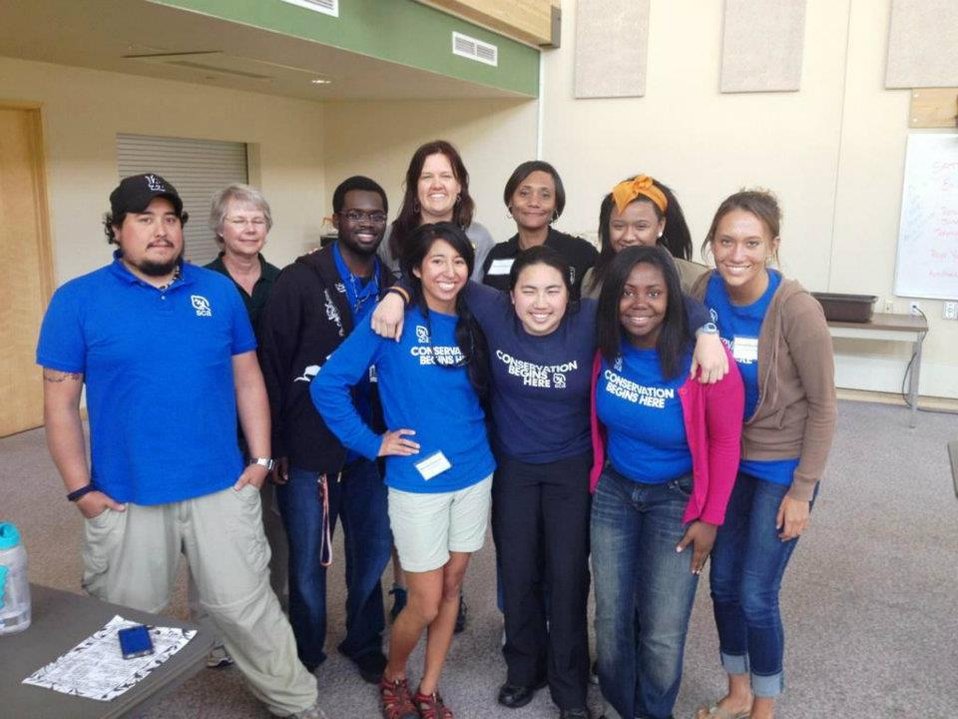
2012-Alaska Region-Work(05)

Alaska Career Discovery Program in Partnership with the Student Conservation Association